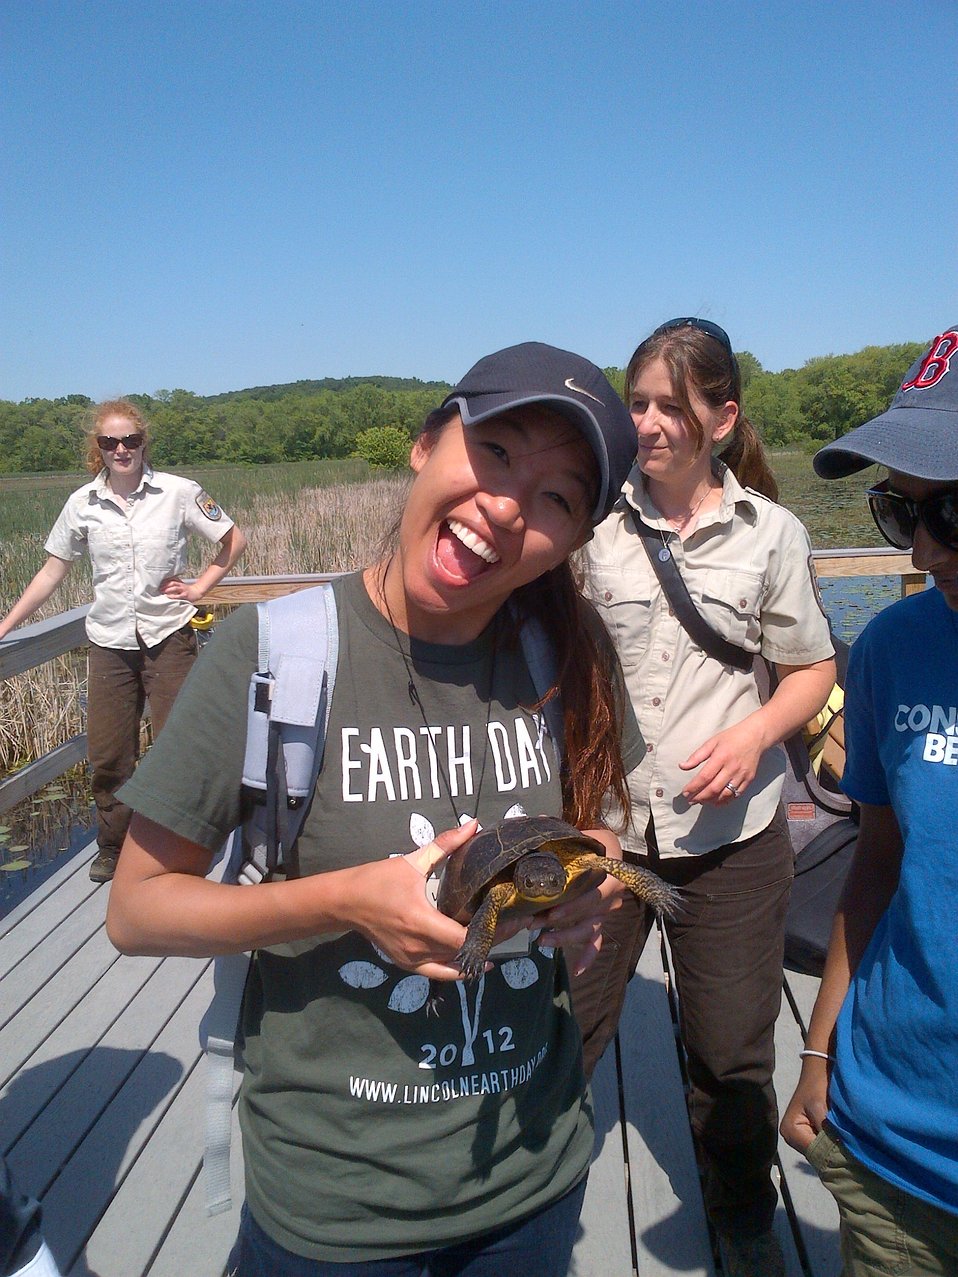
Having fun with Blanding's Turtles!

Vivan holding a Blanding's Turtle at the Great Meadows NWR: Concord Unit.